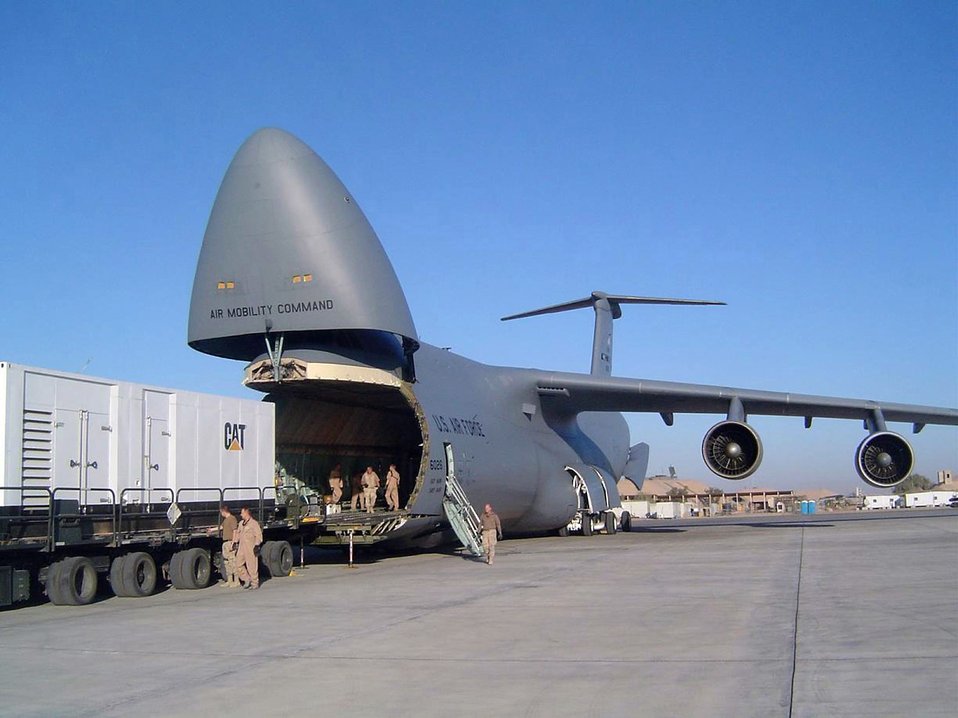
Detachment support

BALAD AIR BASE, Iraq -- Airmen with Detachment 5, 721st Air Mobility Operations Group, help unload equipment from a C-5 Galaxy Jan. 9. The unit deployed from Ramstein Air Base, Germany.